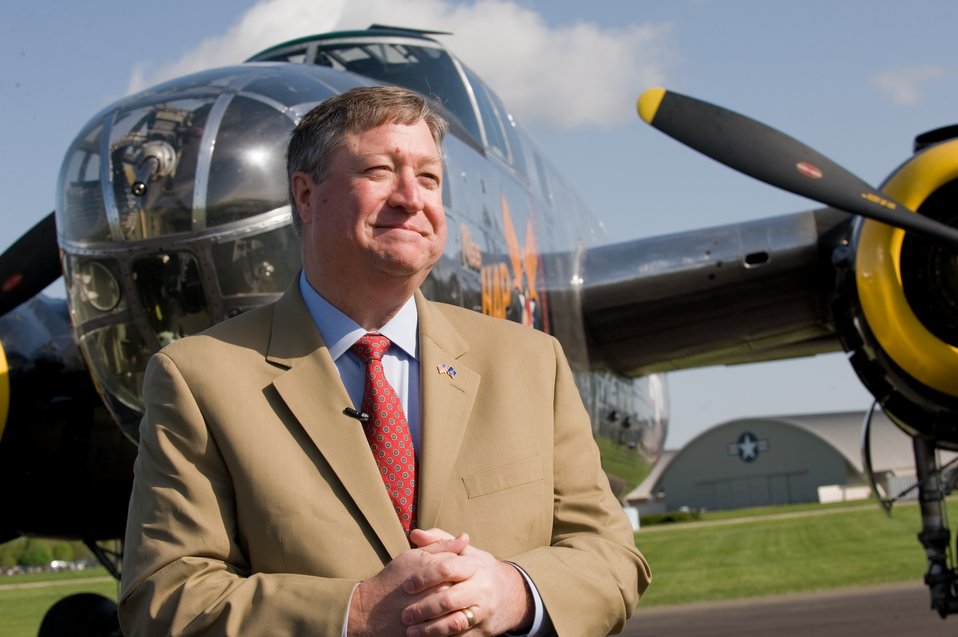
Mass B-25 Arrival

Secretary of the U.S. Air Force, Michael Donley speaks about the Doolittle Raiders during their 68th reunion held at the National Museum of the United States Air Force, Wright-Patterson Air Force Base, Ohio, April 17th, 2010. Secretary Donley is standing in front of B-25A